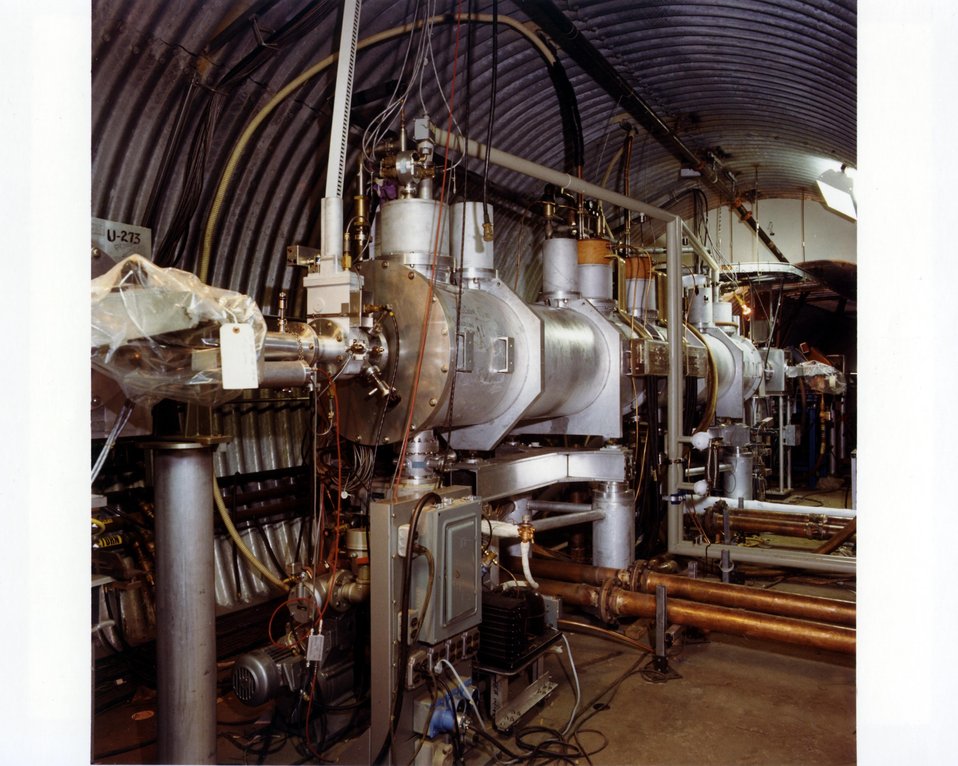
THE SPARK CHAMBER MAGNET INSTALLED IN THE AGS TUNNEL.

THE AGS ACCELERATES PROTONS (THE NUCLEI OF HYDROGEN ATOMS) TO AN ENERGY OF 30 BILLION ELECTRON VOLTS (GEV) TO PROVIDE PROJECTILES FOR SMASHING THE NUCLEUS OF OTHER ATOMS. THE ENORMOUS ENERGY RELEASED IN THIS COLLISION SCATTERS THE PRI-MARY PROTONS AND THE CONSTITUENTS OF THE TARGET NUCLEUS AND ALSO RESULTS IN THE PRODUCTION OF NEW UNSTABLE SHORT LIVED PARTICLES NOT FOUND IN ORDINARY MATTER. THE STUDY OF THE SCATTERING AND PRODUCTION PROCESSES PROVIDES INFORMATION ABOUT THE CONSTITUENTS OF THE PROTON.